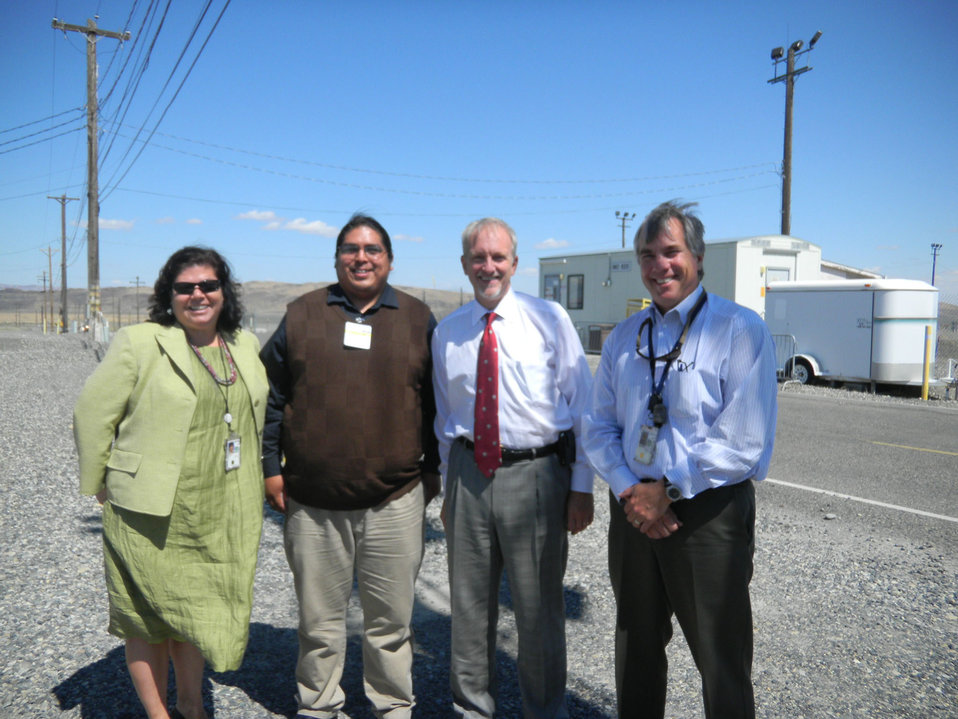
HUIZENGA VISIT 2011 AT TANK FARMS